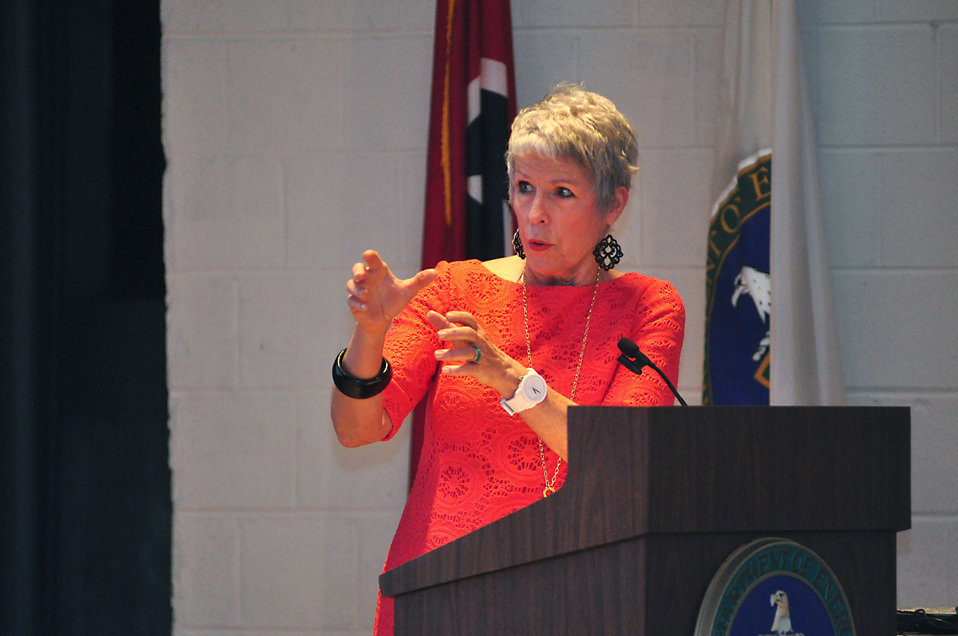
Oak Ridge Business Saftey Partnership Meeting UPF 2014 Oak Ridge

14-042-DOE photo Lynn Freeny 4-2-2014 Jenny Freeman Chair, ORBSP Planning Committee Oak Ridge Tennessee